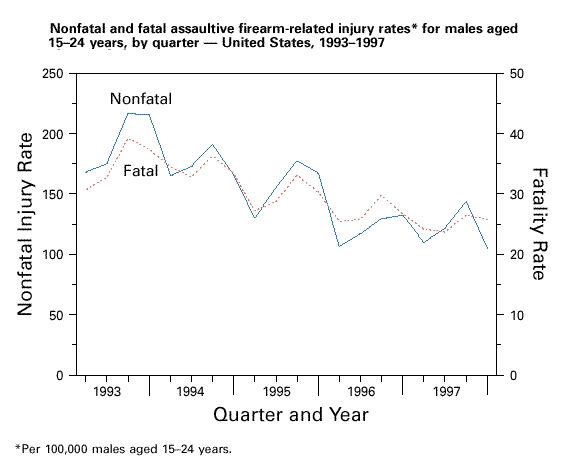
Line graph showing firearm-related injury rates for males aged 15-24 years, 1993-1997.